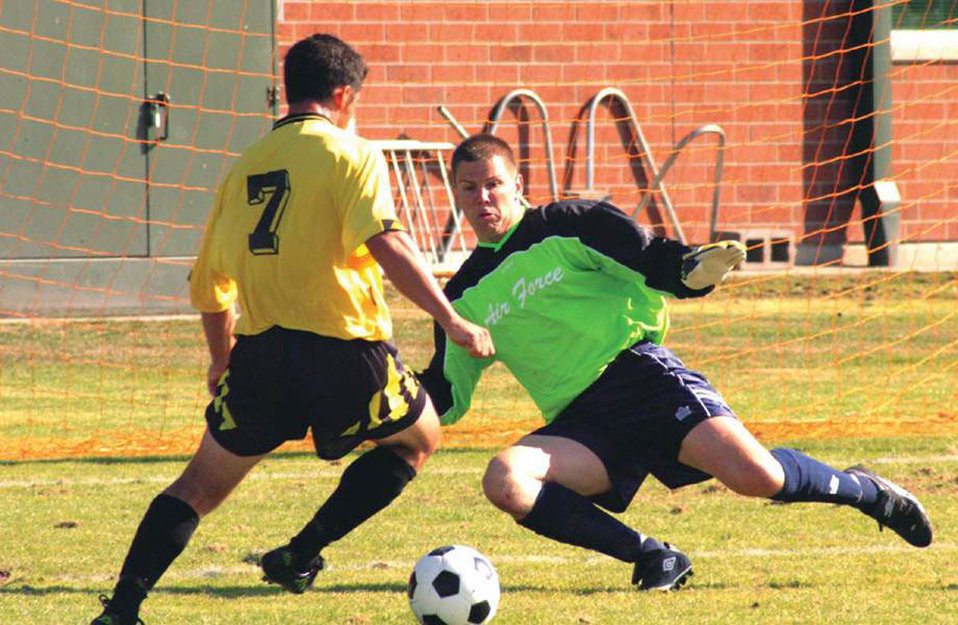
Guarding

NAVAL AIR STATION EVERETT, Wash. -- Jason Shoffit, McChord Air Force Base, Wash., guards the goal against a soldier during a soccer tournament here. The Army won the weeklong tri-service event 5-0, but the Air Force team finished a respectable second.